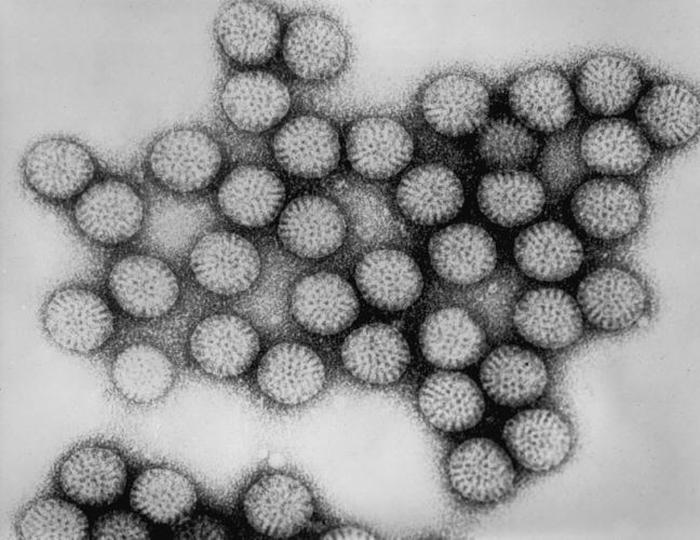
This transmission electron micrograph (TEM) depicted numbers of intact rotavirus double-shelled particles. Note the distinctive rim of radiating capsomeres. See PHIL 178 for a colorized version of this image.